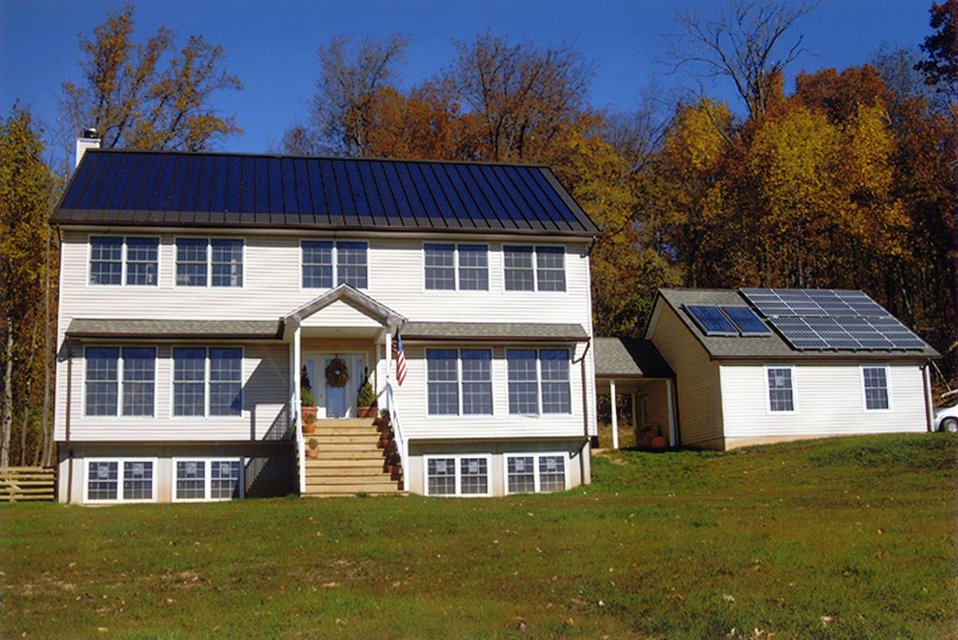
FRONT VIEW OF THE SOLAR PATRIOT HOUSE.

THE SOLAR PATRIOT, A MODULAR HOME DISPLAYED ON THE NATIONAL MALL IN APRIL, 2001 AS PART OF THE SOLAR FORUM 2001, WAS PERMANENTLY INSTALLED IN NORTHERN VIRGINIA. THIS ZERO ENERGY HOME PRODUCES ALL THE ENERGY IT NEEDS FEATURING PHOTOVOLTAIC SYSTEMS, PASSIVE SOLAR DESIGNS, GEOTHERMAL HEAT PUMP, COMPACT FLUORESCENT LIGHTING AND HIGH EFFICIENCY APPLIANCES. IT IS CONNECTED TO THE ELECTRICITY GRID, BUT HAS THE CAPABILITY TO OPERATE AT LEAST 24 HOURS WITHOUT ELECTRICITY FROM THE UTILITY.